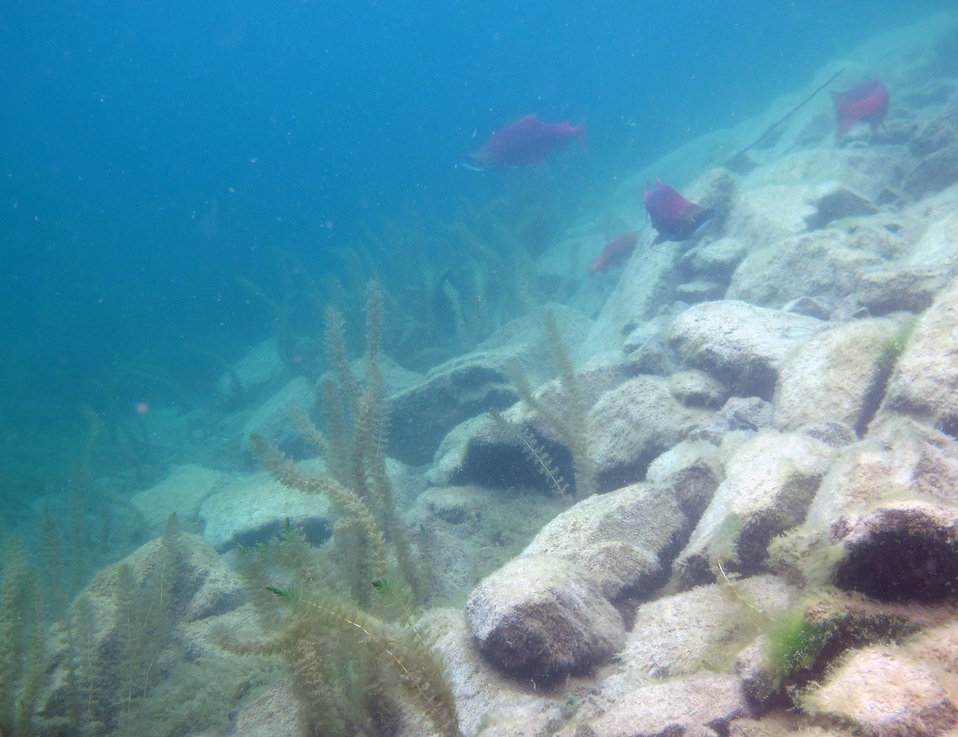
shoreline sockeyes